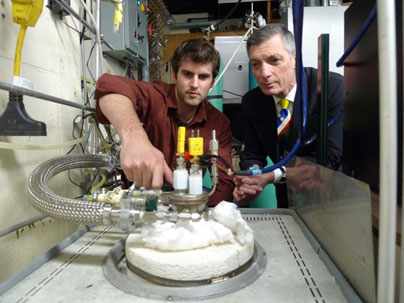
Dr. Don Sadoway

At MIT, Dr. Don Sadoway received a grant through ARPA-E to develop all liquid metal batteries.